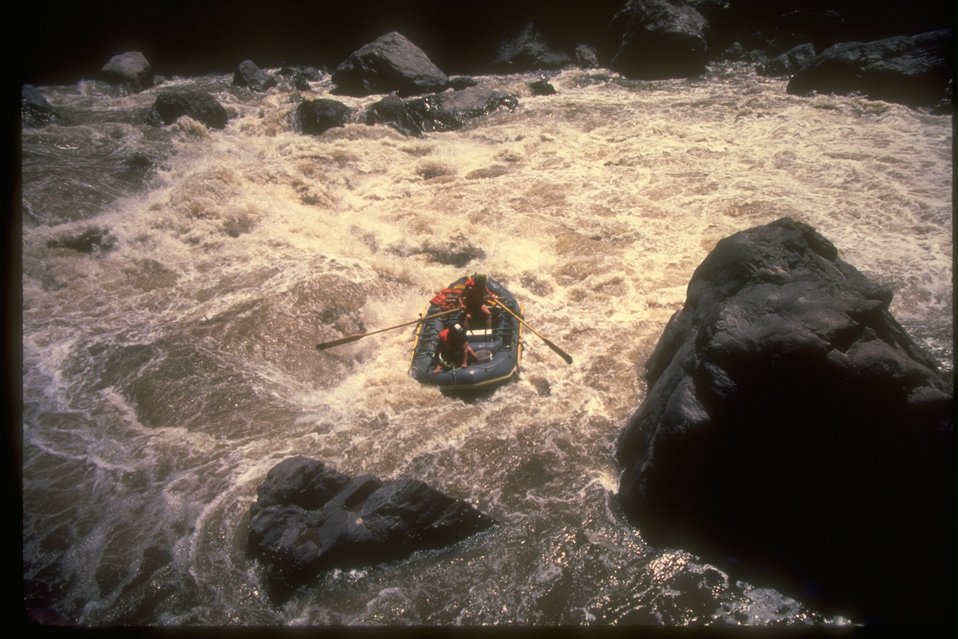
Whitewater Rafting on the Owyhee River.